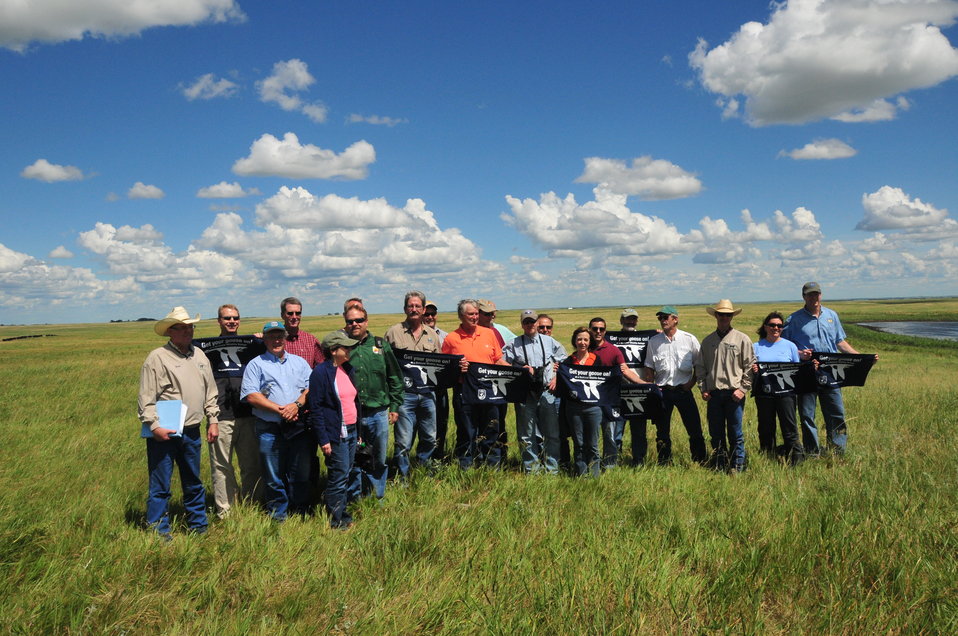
Get Your Goose On!

The national meeting for regional chiefs of the National Wildlife Refuge System is held three times a year in different locations around the country. This 2012 meeting took place in McPherson County, South Dakota, and focused on the Dakota Grassland Conservation Area.

This photo was taken on the Wade Weiszharr and Family Ranch, which contains perpetual U.S. Fish and Widlife grassland and wetland easements. This site is also located in the heart of Prairie Pothole Region, making it extremely productive migratory bird habitat and a great place to “Get your goose on!”

Here is a group shot taken on the Wade Weisszhauer Ranch!